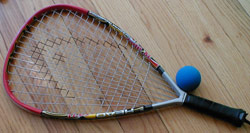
Typical racquetball racquet and ball used in the USA